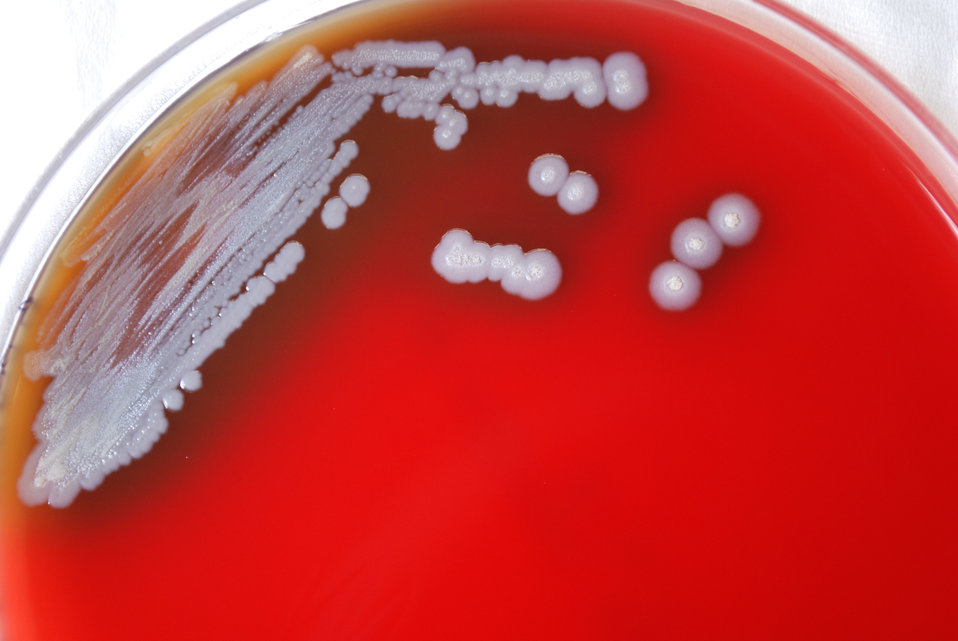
A closer view of PHIL 12275, this photograph depicts the colonial morphology displayed by Gram-negative Burkholderia pseudomallei bacteria, which was grown on a medium of sheep's blood agar (SBA), for a 72 hour time period, at a temperature of 37�C. B. pseudomallei is the bacterium responsible for causing the infectious disease known as melioidosis.